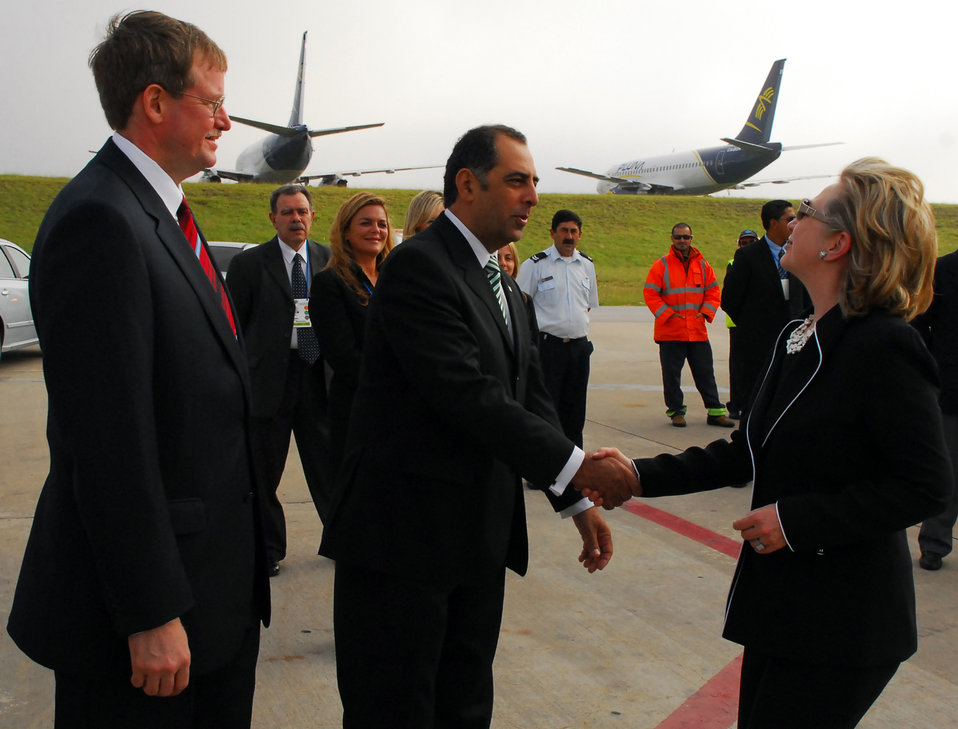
Secretary Clinton Arrives in Montevideo, Uruguay

U.S. Secretary of State Hillary Rodham Clinton is welcomed by officials as she arrives in Uruguay March 1, 2010.